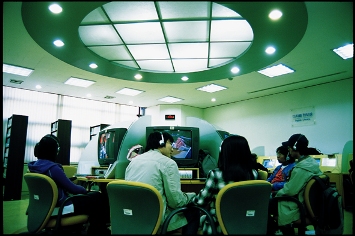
Digital Library at Ajou University.